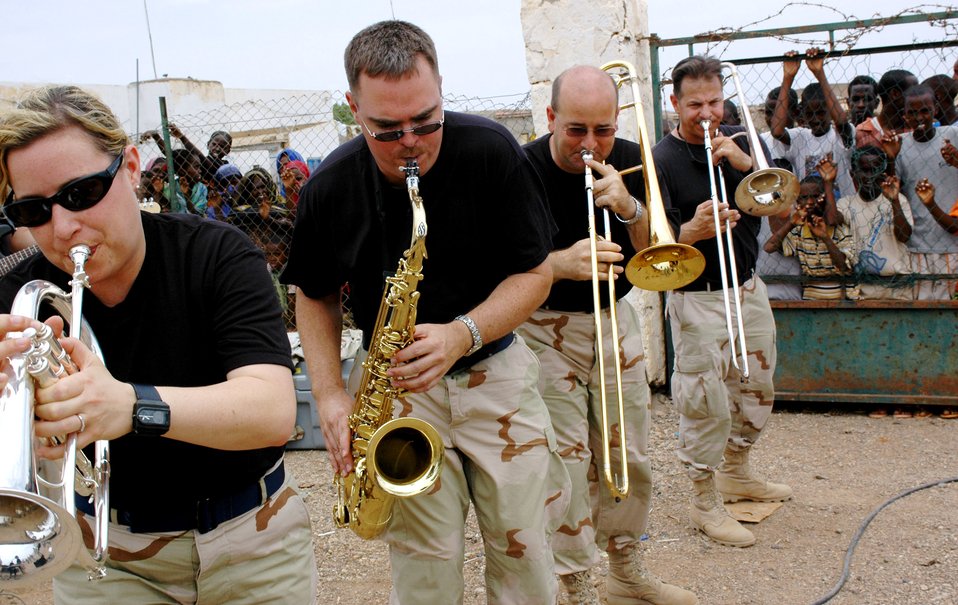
Rock band reaches out to Djiboutian villages

(From left) Tech. Sgt. Shonda Winkler, Senior Master Sgt. Mark Bruehl, Capt. Jeffery Matthews and Senior Master Sgt. John Cornachionne, members of the U.S. Central Command Air Forces band